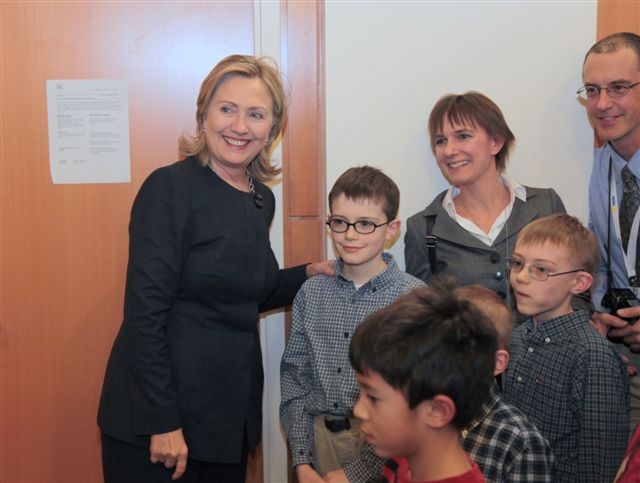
Secretary Clinton Greets Members of the U.S. Embassy Astana Staff

U.S. Secretary of State Hillary Rodham Clinton greets members of the U.S. Embassy Astana staff and their families in Astana, Kazakhstan, on December 1, 2010.